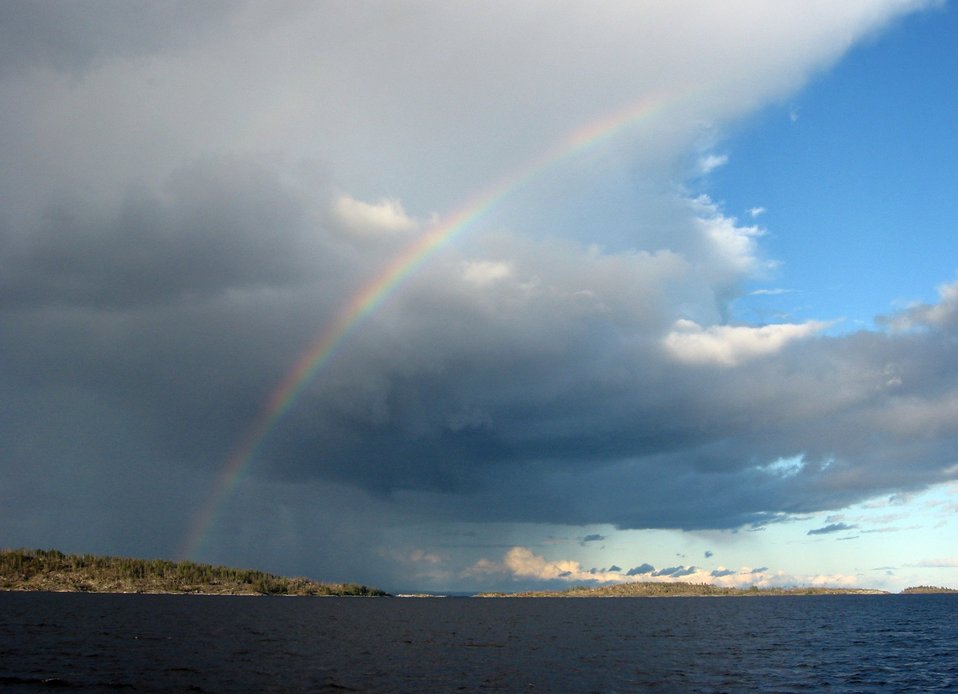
Rainbow at Ladoga